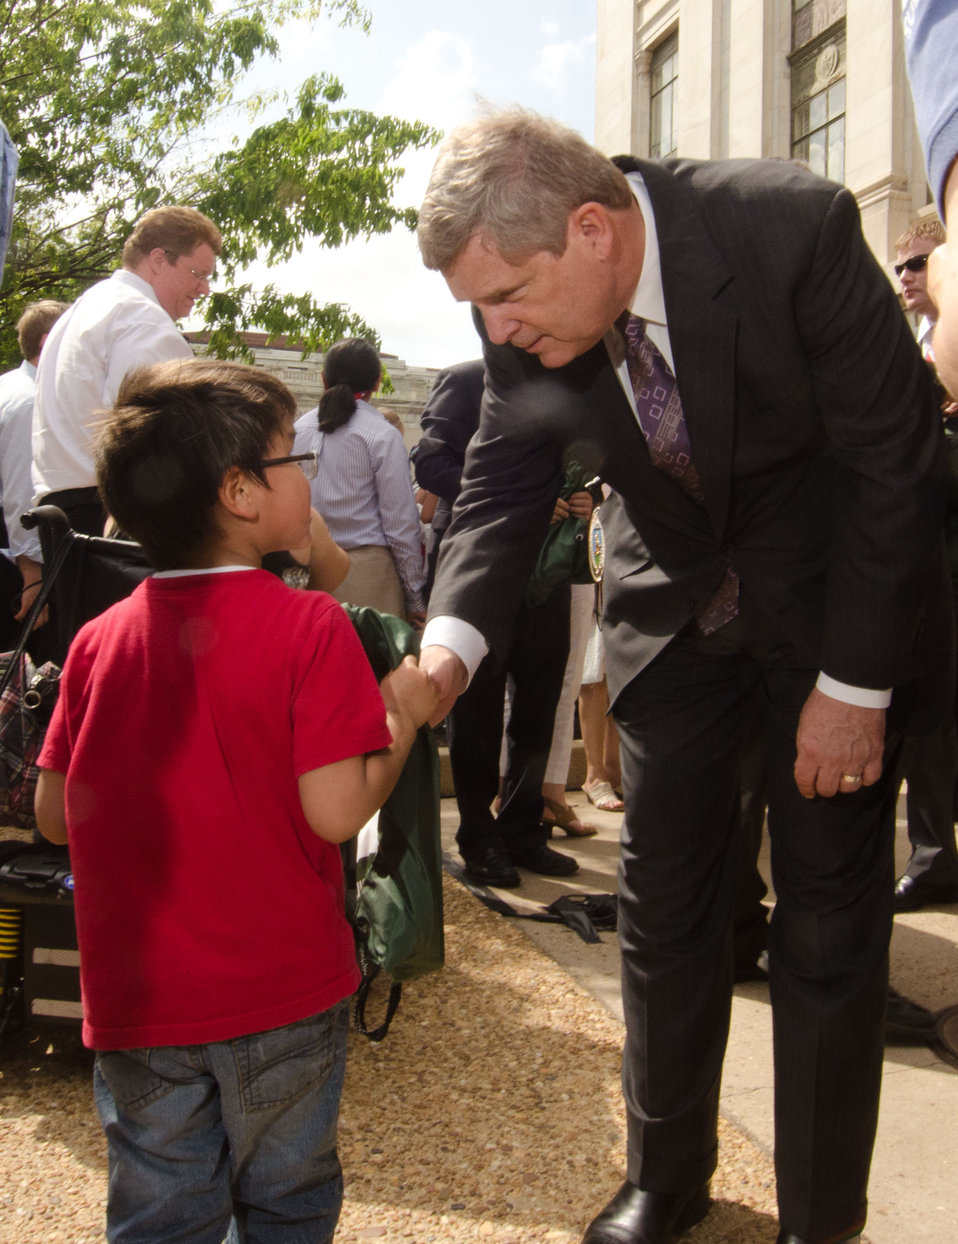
Agriculture Secretary Tom Vilsack met with Native American Youth at the U. S. Department of Agriculture in Washington, DC, on Wednesday, April 2, 2011 to encourage them to pursue a healthy lifestyle. After opening remarks and questions, Secretary Vilsack spent time with the 30 Students from Eastern and Western Tribes, Southeast Alaska, and Tuba City, Arizona, at he garden called The Roots of American Agriculture, and is part of the Headquarters’ People’s Garden.